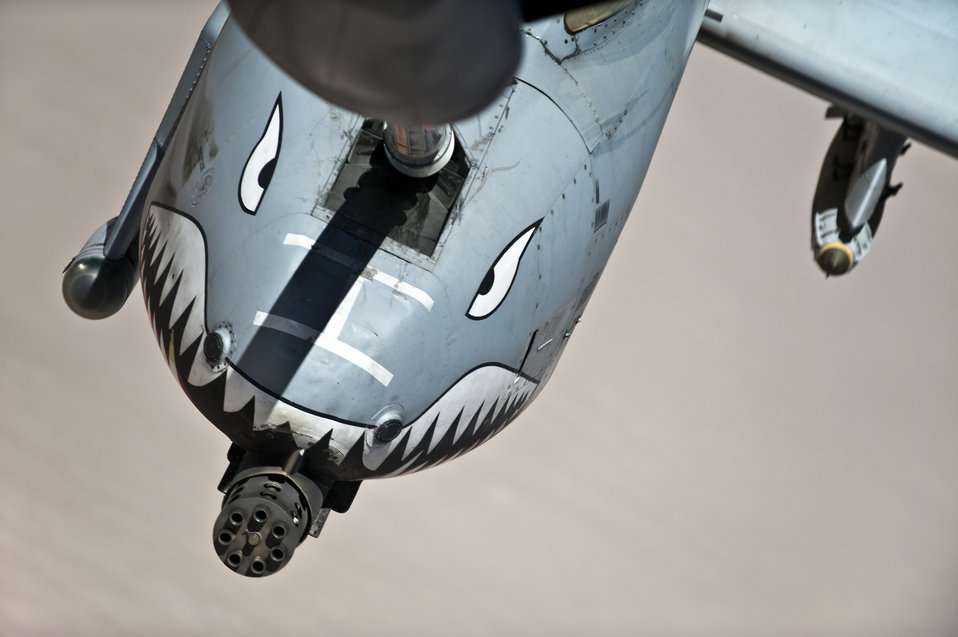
An A-10 Thunderbolt II is refueled over southern Afghanistan. The most prominent feature of the A-10 Thunderbolt II is the 30 mm GAU-8/A Avenger Gatling-gun cannon. This weapon is capable of firing 3,900 rounds a minute and can defeat an array of ground targets, including tanks. Both the A-10 and GAU-8 entered service in 1977, and the gun represents 16 percent of the aircraft's weight